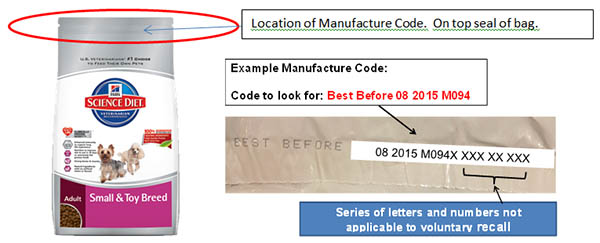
RECALLED – Dry dog food

June 2, 2014 – Product Recall – Hill’s Pet Nutrition, Inc. Voluntarily Recalls 62 Bags of “Science Diet® Adult Small & Toy Breed™” Dry Dog Food in California, Hawaii and Nevada Because of Potential Health Risk.